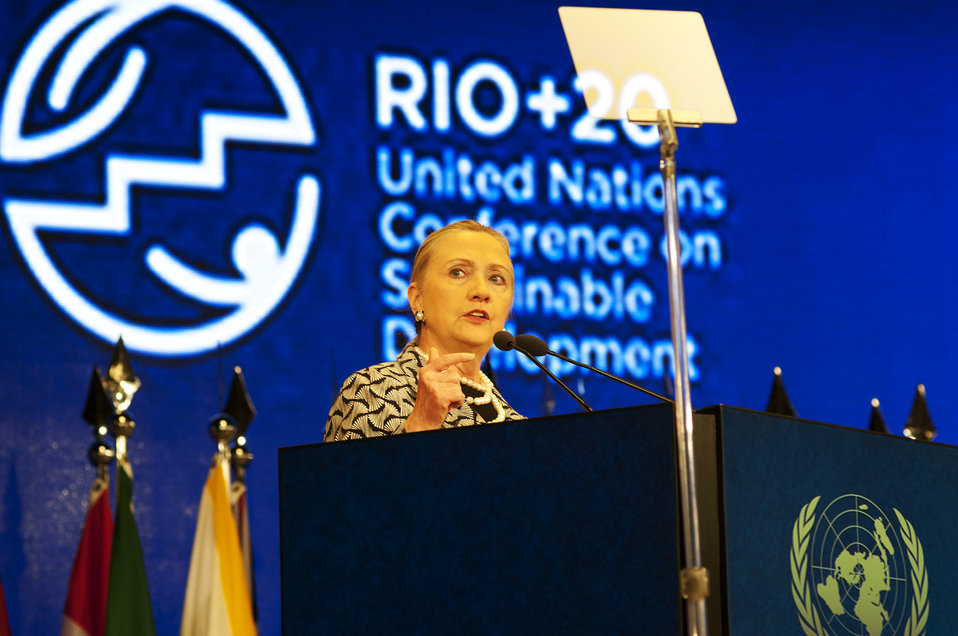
Secretary Clinton Delivers Remarks During the Plenary Session of the Rio 20 Conference

U.S. Secretary of State Hillary Rodham Clinton delivers remarks during the plenary session on the Rio 20 Conference in Rio de Janeiro, Brazil on June 22, 2012.